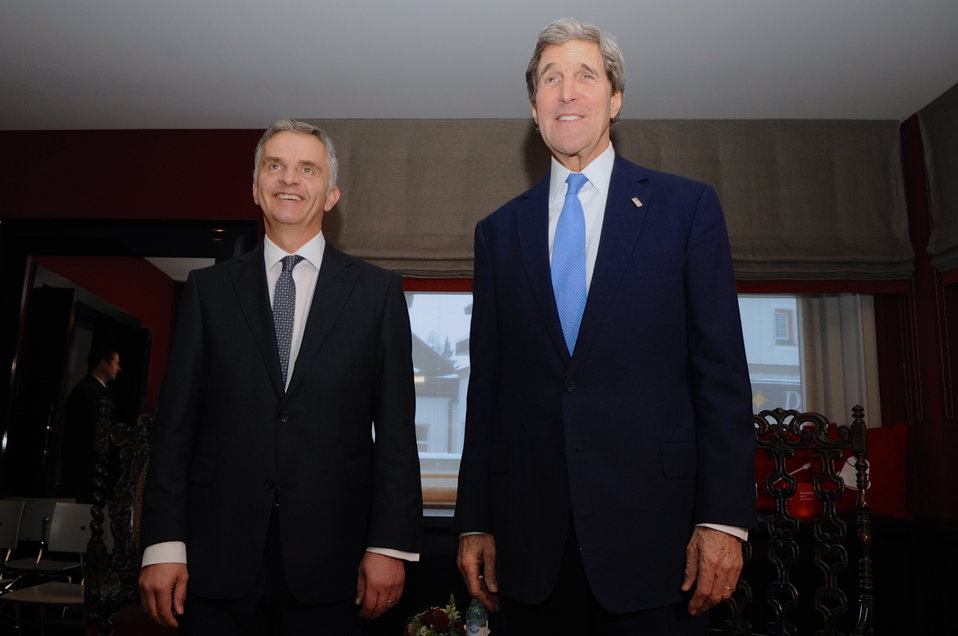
Secretary Kerry and Swiss President Burkhalter in Davos

U.S. Secretary of State John Kerry stands with Swiss Federation President Didier Burkhalter before a bilateral meeting on the sidelines of the World Economic Forum in Davos, Switzerland, on Jan. 24, 2014.